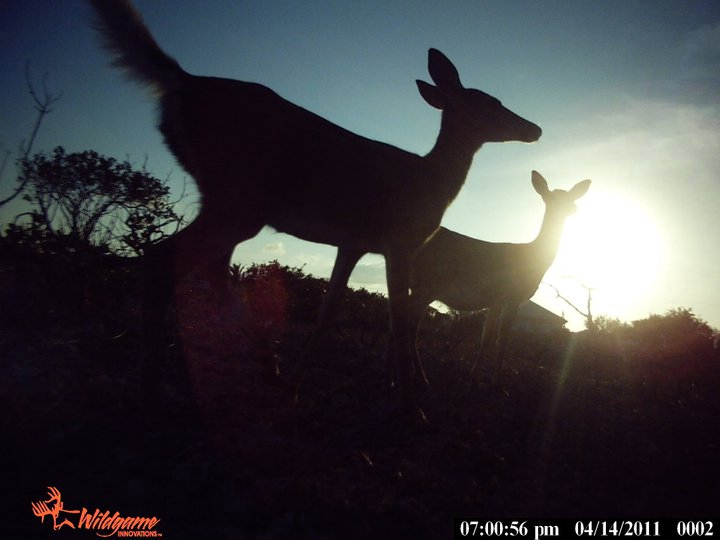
key deer at sunset

Florida Keys National Wildlife Refuge Complex, FL
Camera trap photo: USFWS